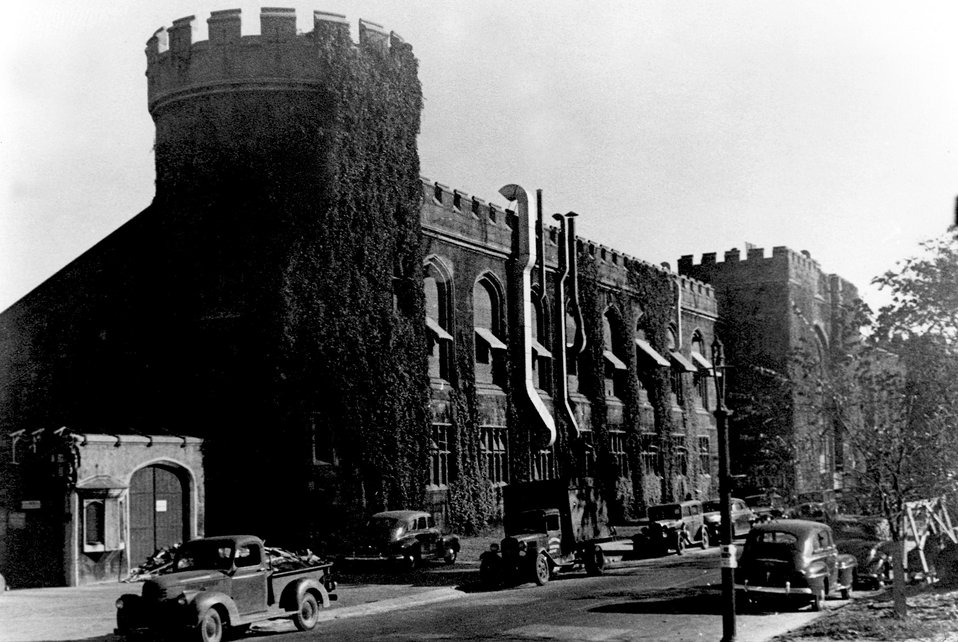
View of west end of Stagg Field, The University of Chicago, as it looked during World War II..